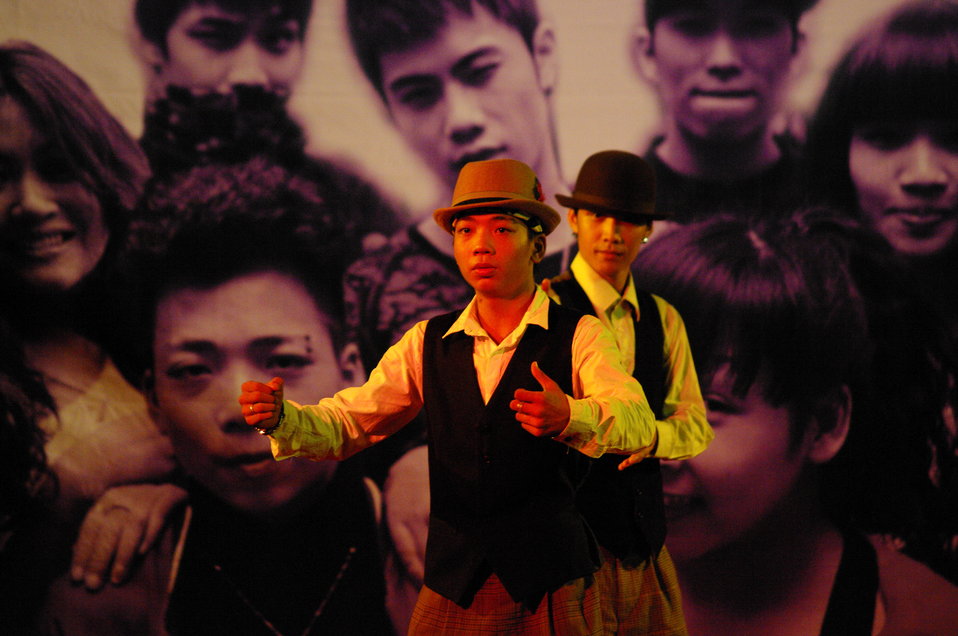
PEPFAR Sponsors Hip Hop to Stop the Spread of HIV